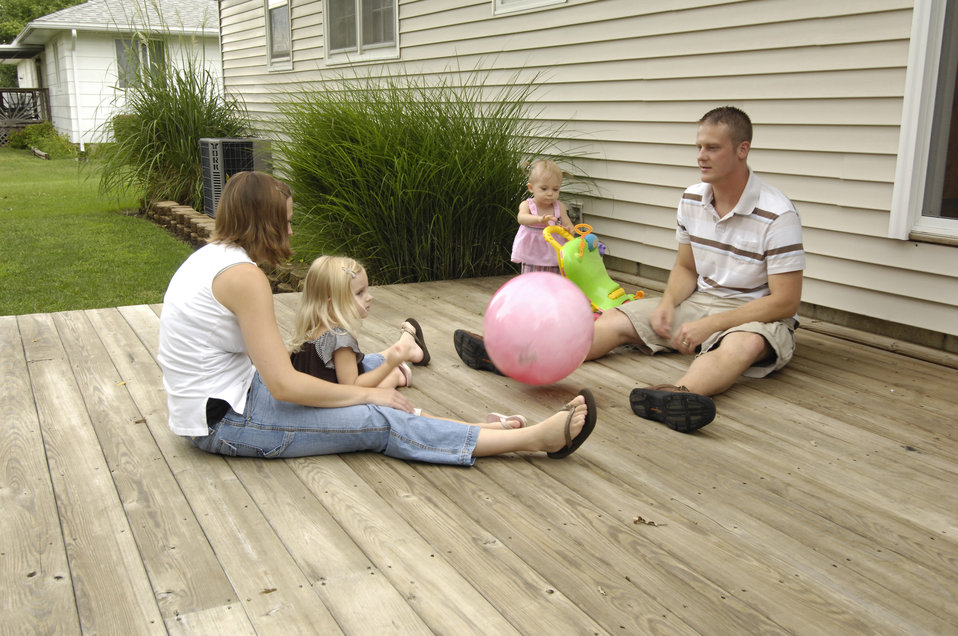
Christopher, Hope, Makenna and Natasha Goetz play on the deck of their home in Garnett, Kansas on August 18, 2009. The Goetz's were able to purchase their home with money from the U. S. Department of Agriculture (USDA) Rural Development (RD) loan guarantee program. The money from the submitting lender and originating lender has guaranteed many loans in Kansas from funding available through the American Recovery and Reinvestment Act of 2009 (ARRA).